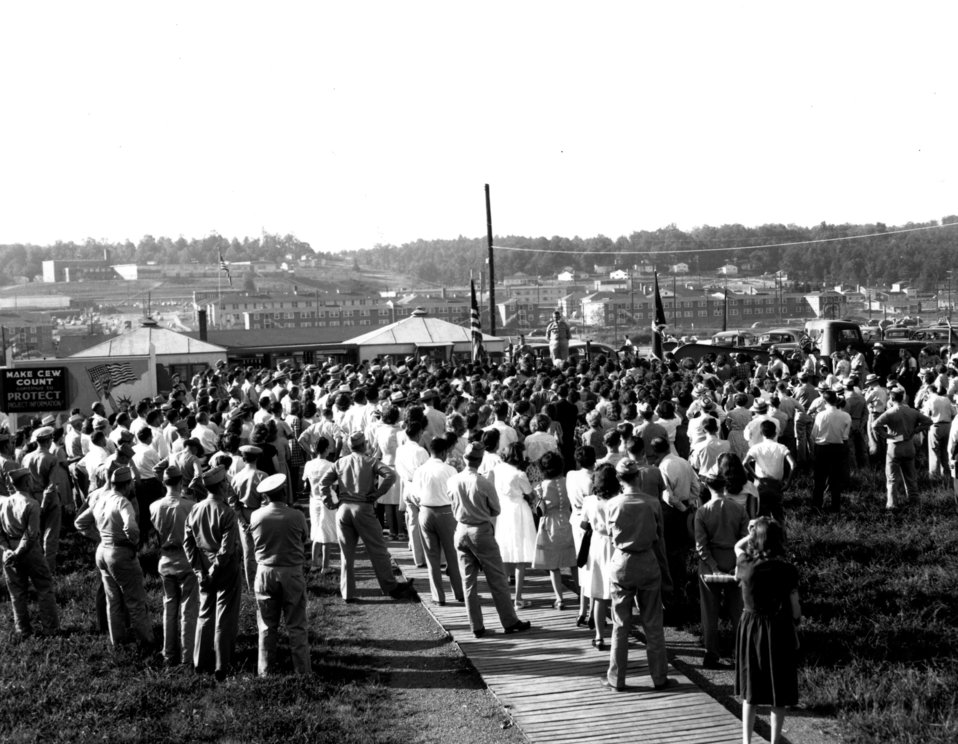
Army Activity at Oak Ridge